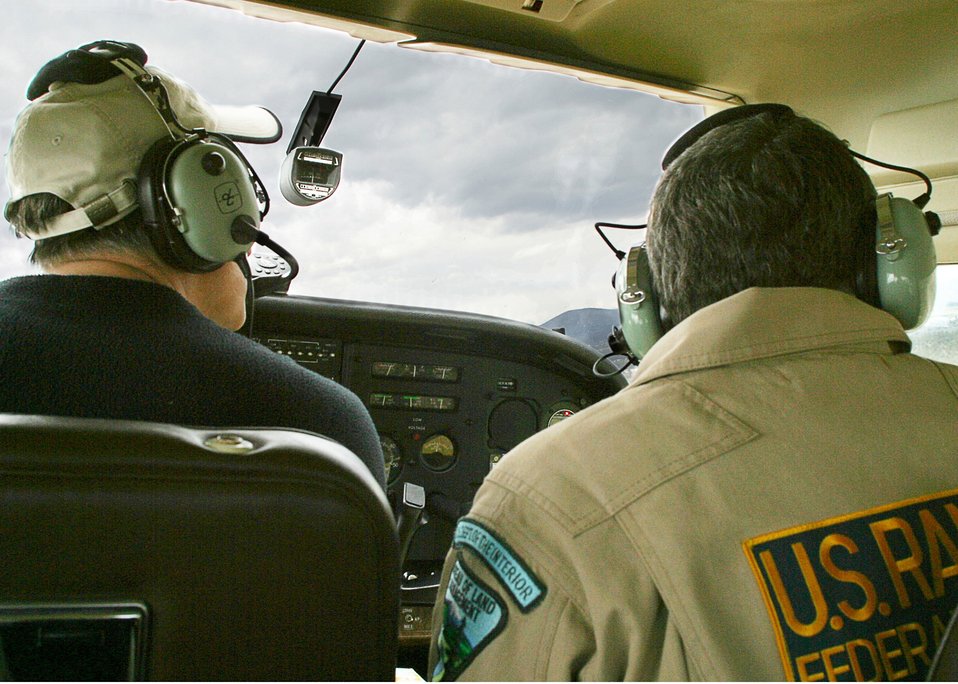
BLM Ranger Tom Teaford of the Prineville Distirict and pilot Keith Kadlicik fly aerial patrols over the rural-urban interface of public lands in central Oregon. April 12, 2003.